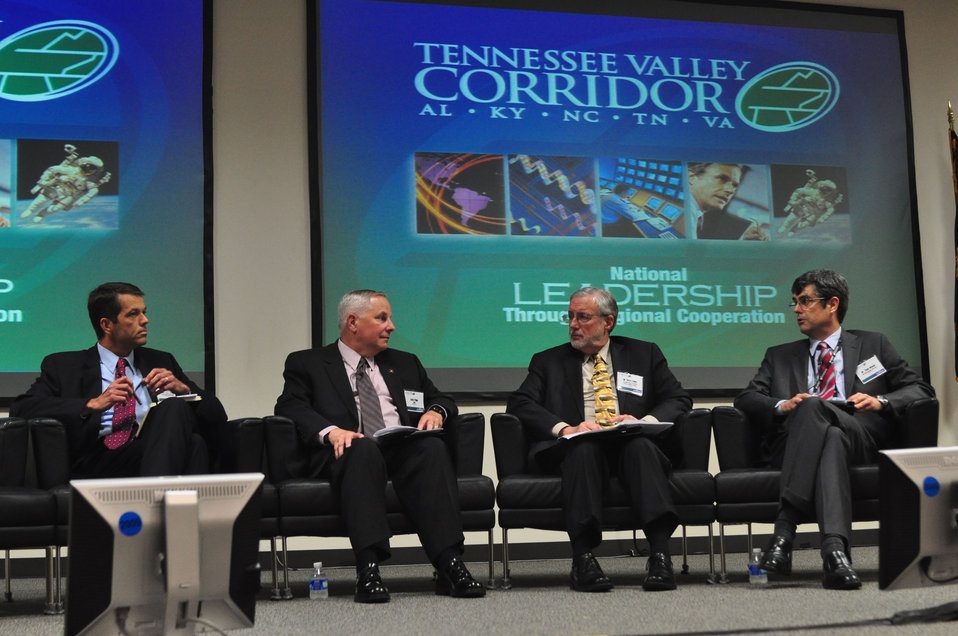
Tennessee Valley Corridor Summit Oak Ridge

13-062 DOE photo Lynn Freeny 5-29-2013 Oak Ridge Tennessee